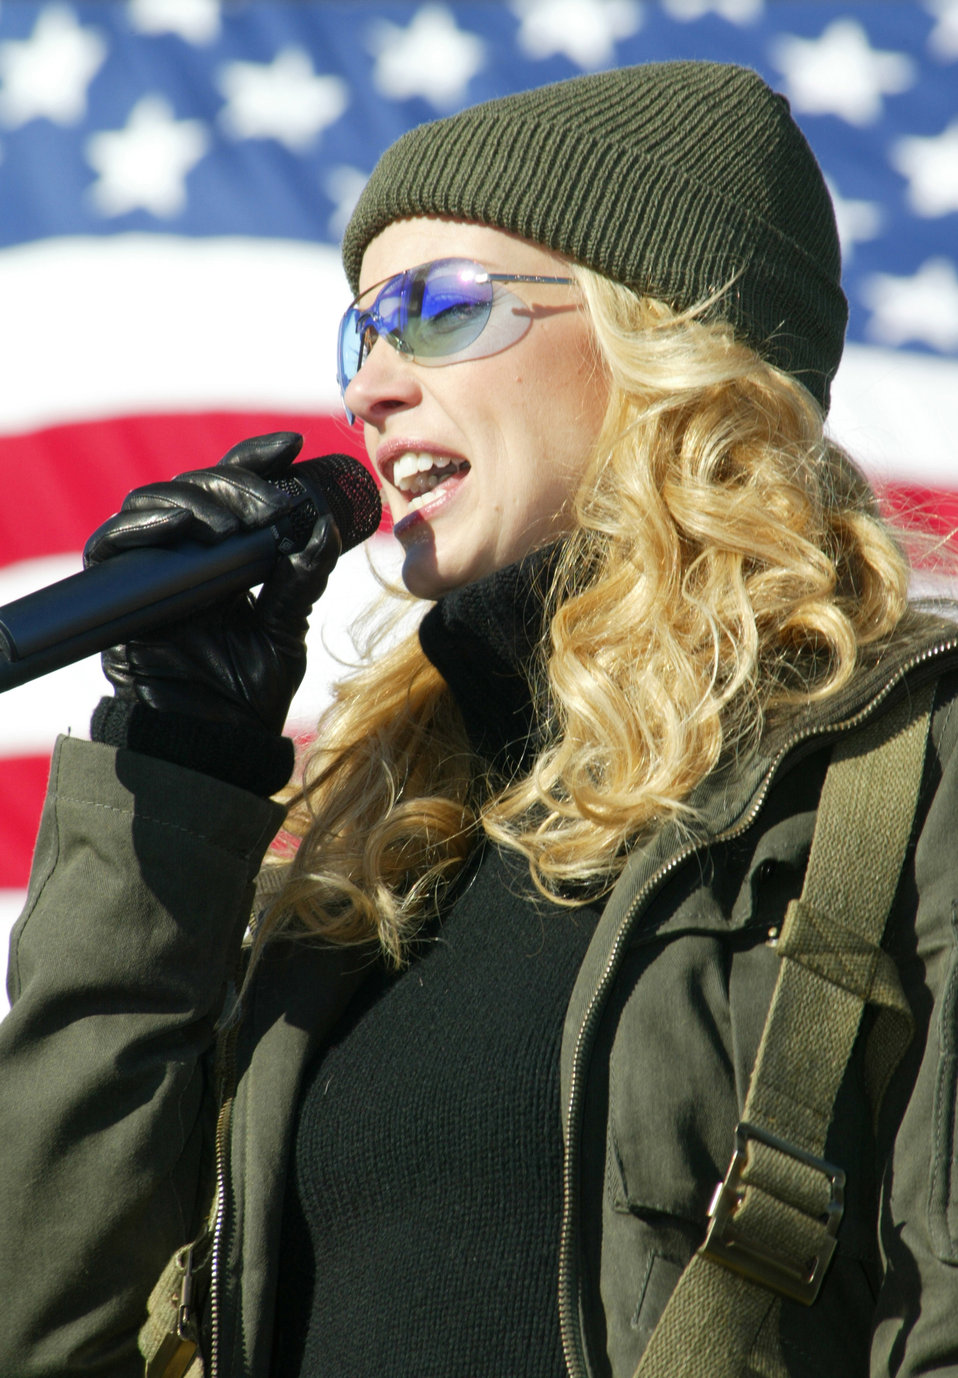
You gotta have Faith

FORT BRAGG, N.C. (AFPN) -- Faith Hill sings during a free concert she performed for people from here and nearby Pope Air Force Base on Feb. 13. The three-time Grammy Award-winning country musician performed a live five-song concert as a tribute to America's armed forces and as part of a live broadcast of ABC's